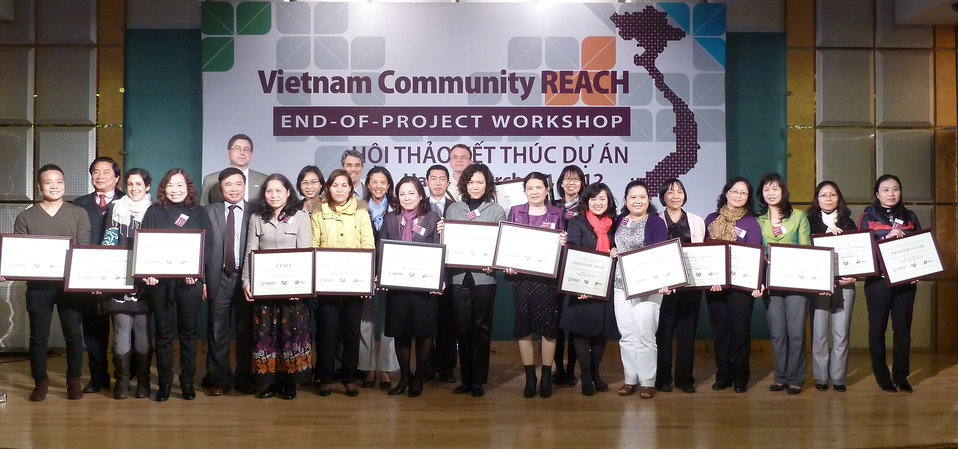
USAID, PEPFAR, and Pact award certificates to local and international partners for their work in addressing HIV in Vietnam

Community REACH project close-out with USAID and implementing partner, Pact